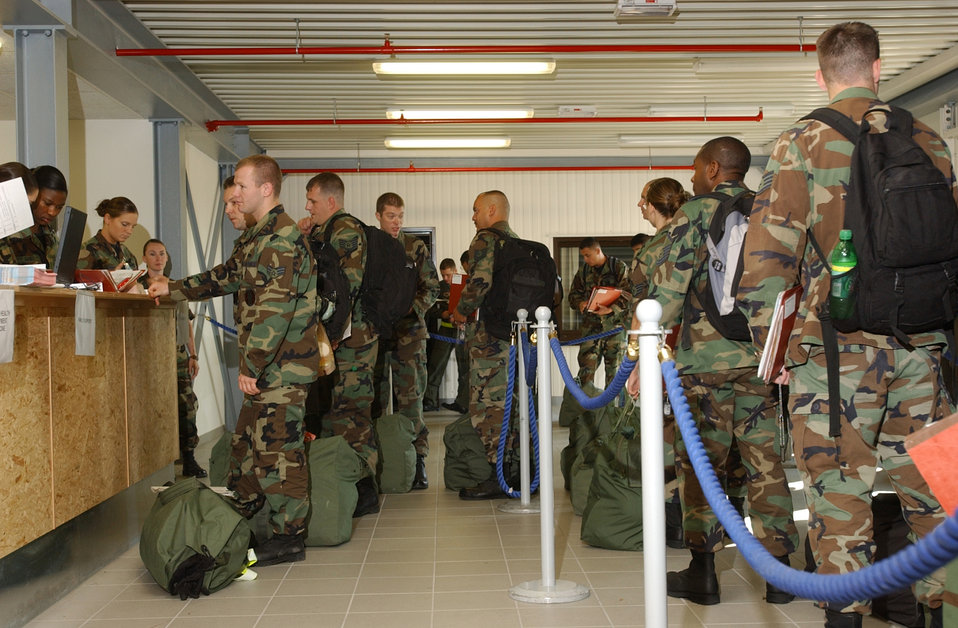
Ramstein planes, Airmen depart for Darfur mission

RAMSTEIN AIR BASE, Germany -- Airmen process through a deployment line July 15 in preparation for a monthlong airlift mission to the Darfur region of Sudan. Three C-130 Hercules and about 40 Airmen here left July 16 for Kigali, Rwanda, as part of NATO's response to support the African Union's expanded peacekeeping mission in Darfur with logistics and training.